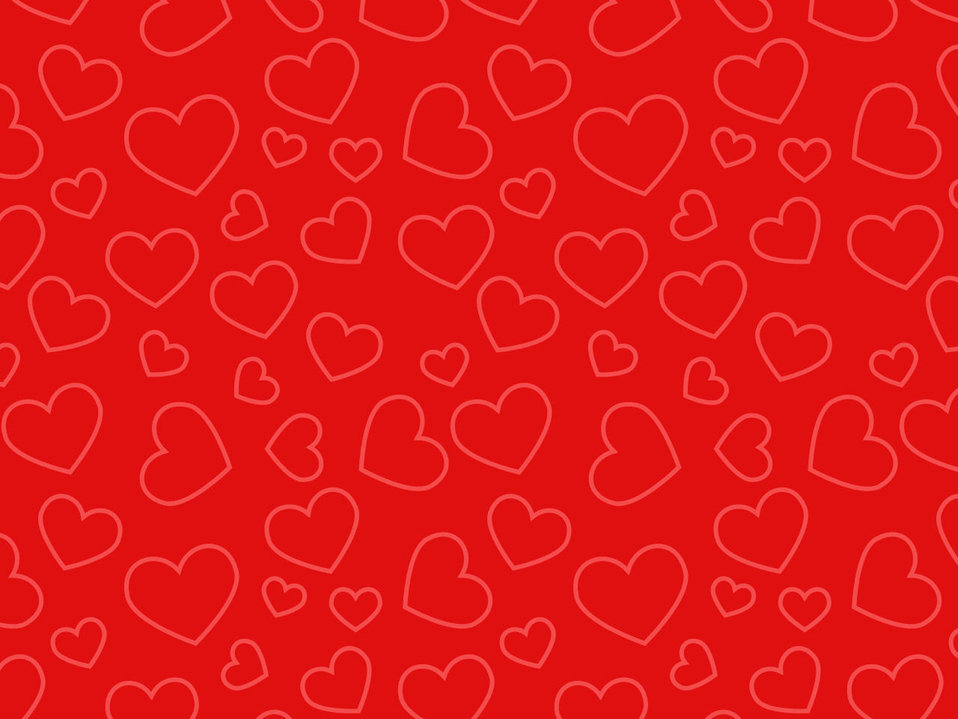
Red hearts

A red background with random sizes of hearts.